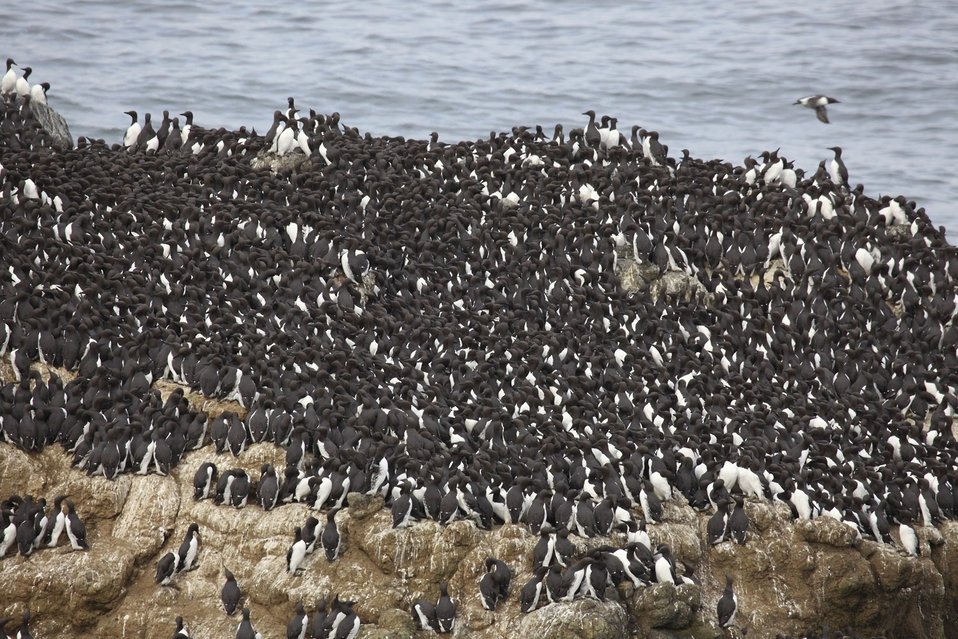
Common Murres, Oregon Islands NWR

Common Murres gather on Colony Rock in the Oregon Islands National Wildlife Refuge.